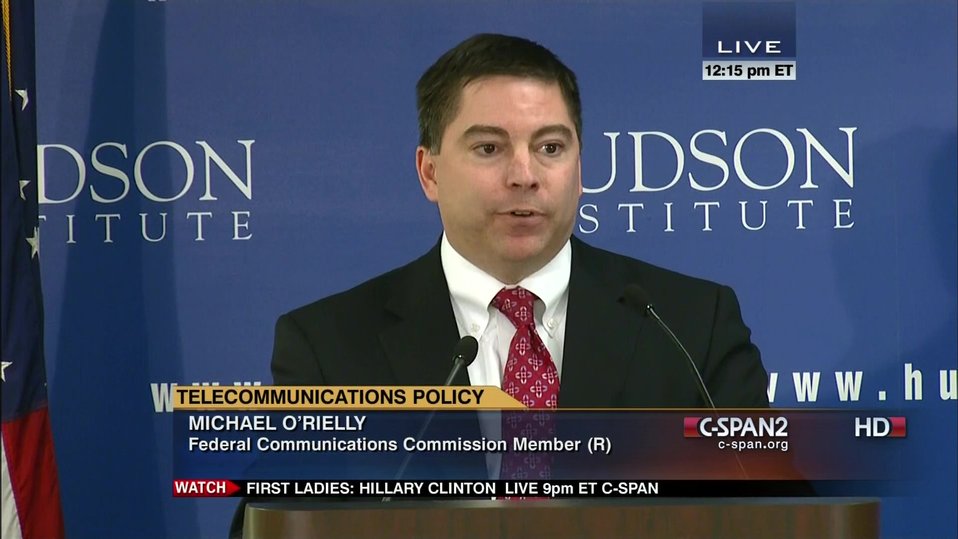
1.27.2014 Hudson Institute

FCC Commissioner Mike O’Rielly gives remarks at The Hudson Institute.
1/27/14